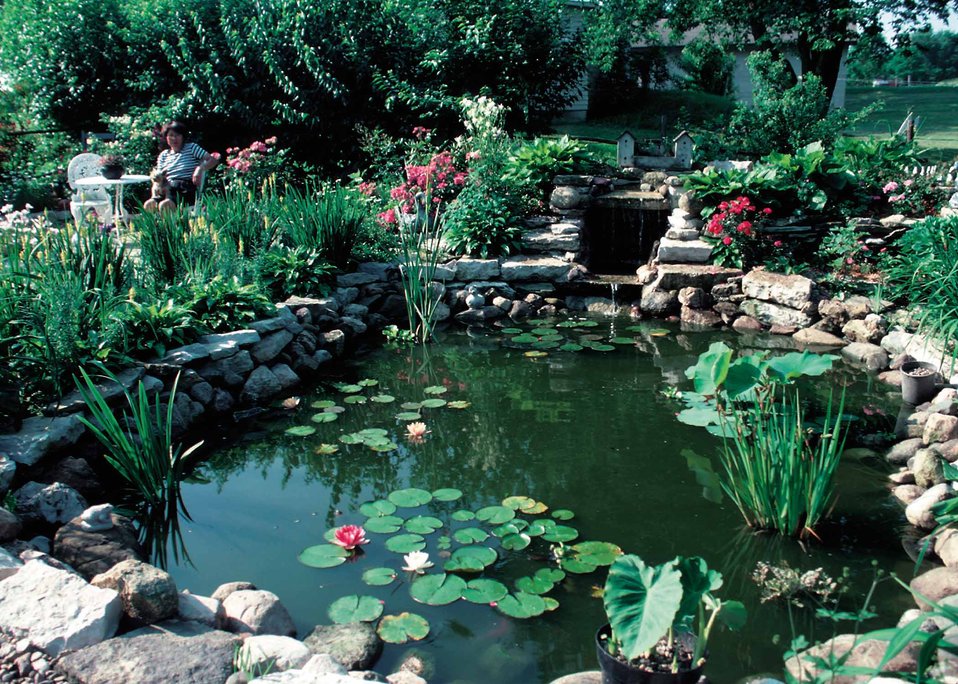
A pond is the focal point of a backyard conservation scene in a backyard in Cantril, Iowa, a small town in Van Buren County in southeastern Iowa.